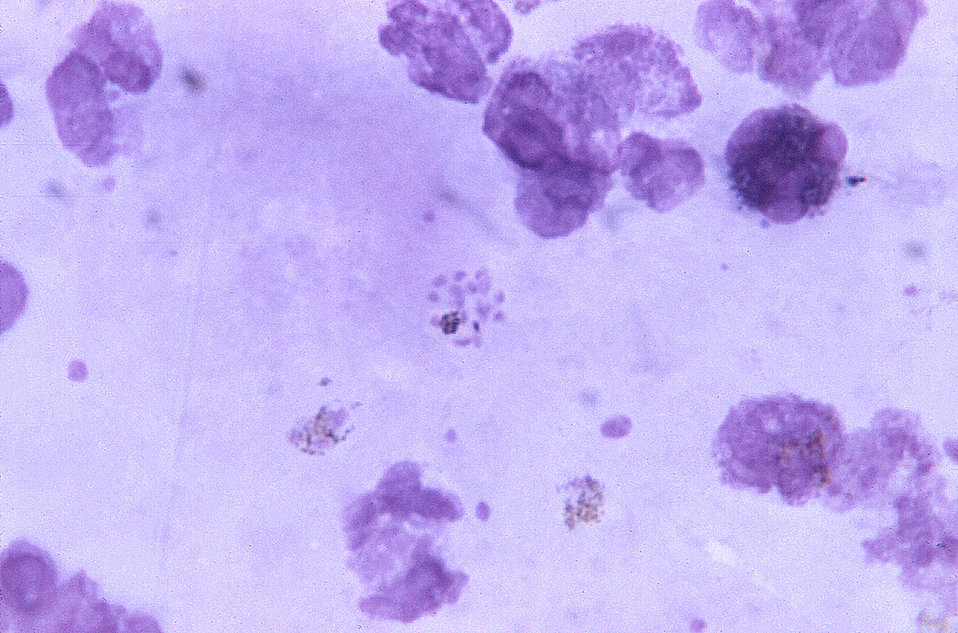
This micrograph depicts the appearance one would expect when applying the Wright's stain to the specimen.